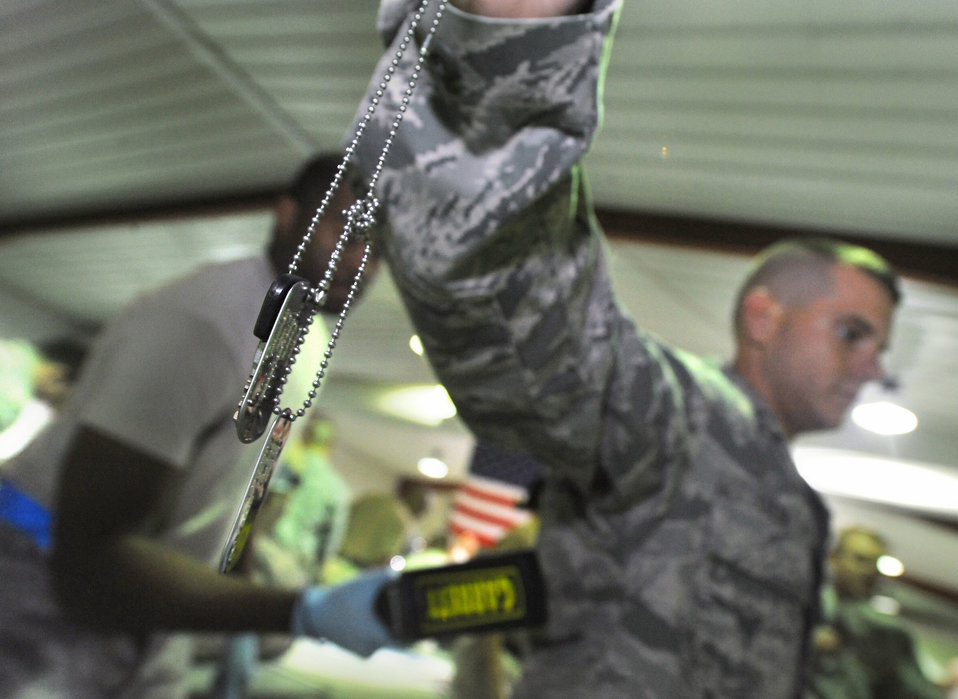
386th AEW customs team

An Airmen holds his dog tags out while being searched during the customs process Dec. 21, 2010, in Southwest Asia. Officials from the 386th Air Expeditionary Wing were able to cut down the redeployment process with the implementation of an all-Air Force customs process, a first in the Air Force Central Command area of responsibility.